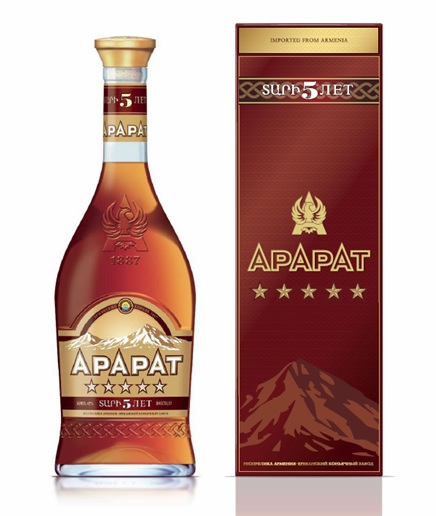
АрАрАт 5 звезд